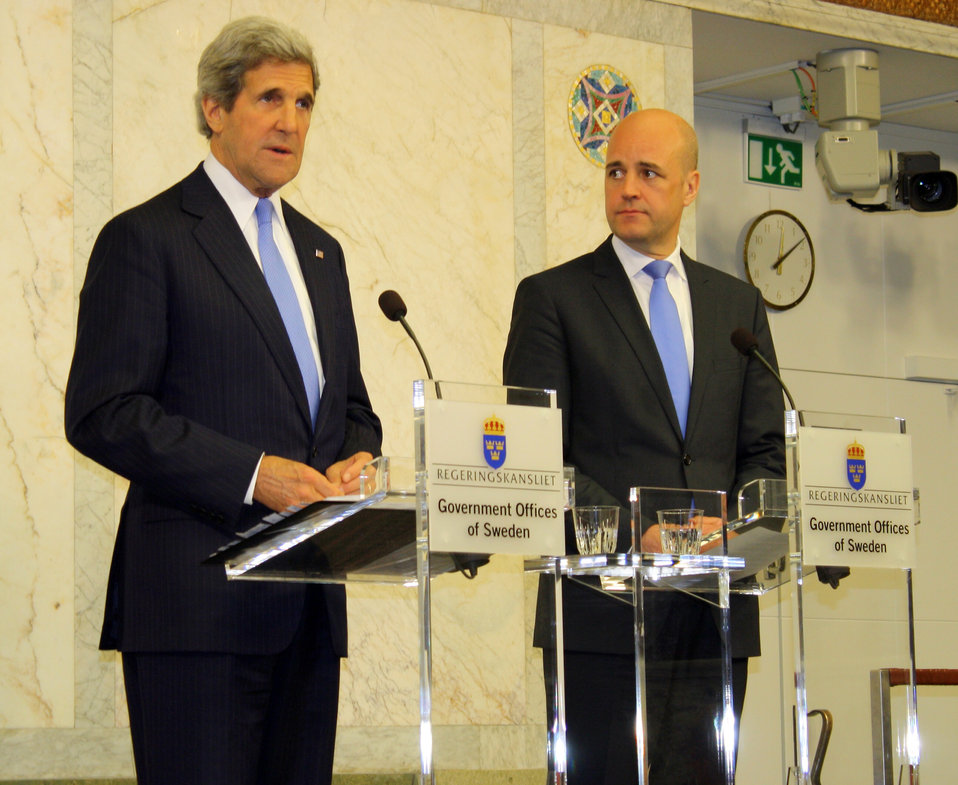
Secretary Kerry Meets With Swedish Prime Minister Reinfeldt

U.S. Secretary of State John Kerry participates in a press conference with Swedish Prime Minister Fredrik Reinfeldt on May 14, 2013 in Stockholm, Sweden.